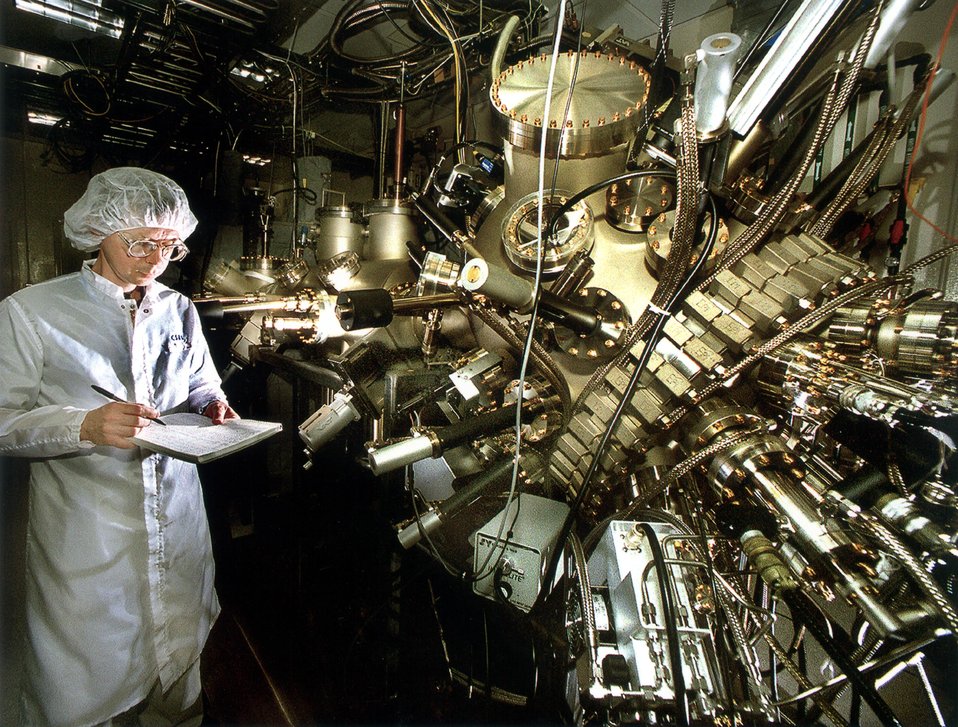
SANDIA RESEARCHER STANDS NEXT TO MOLECULAR BEAM EPITAXY SYSTEM.

WORKING THROUGH A COOPERATIVE RESEARCH AND DEVELOPMENT AGREEMENT (CRADA) WITH CIELO COMMUNICATIONS INC., SANDIA DEVELOPED THE GALLIUM ARSENIDE-BASED VERTICAL CAVITY SURFACE EMITTING LASER (VCSEL). IT WILL BE CHEAPER AND EASIER TO BUILD THAN STANDARD EDGE EMITTING LASERS USED IN CURRENT HIGH-SPEED FIBER OPTICS COMMUNICATIONS. THE MOLECULAR BEAM EPITAXY SYSTEM SEEN IN THE IMAGE IS USED TO GROW THE CRYSTAL STRUCTURE OF THE VCSEL.